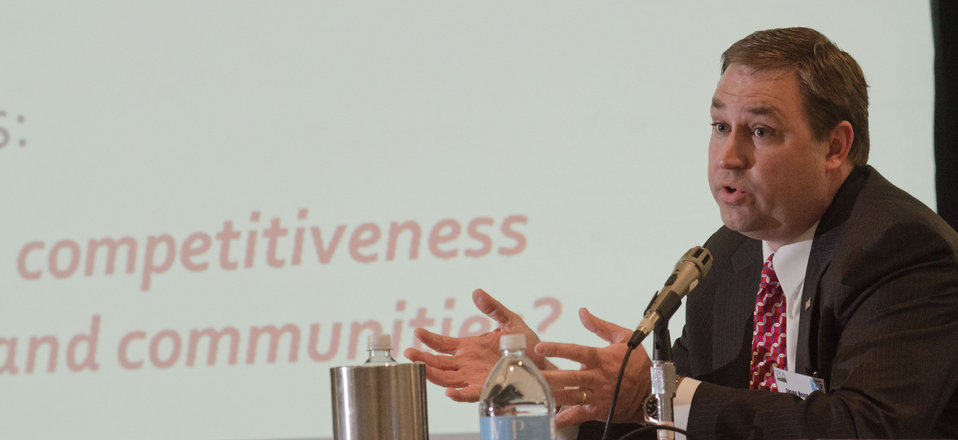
Federal Reserve Bank of Kansas, City Omaha Branch Executive Vice President Jason Henderson, responds to a question, during “The Farm Income Outlook for 2012” session of the Food Prices & Farm Income Track, at the 2012 Agricultural Outlook Forum, “Moving Agriculture Forward, Growing, Innovating and Celebrating 150 Years.” held at the Crystal Gateway Marriott Hotel, Arlington, Virginia, on Friday, February 24, 2012. The session focused on general measures of the financial well being of the farm economy, including USDA’s official outlook for farm income, the distribution of income across farm households, and the competitiveness of the rural economy.